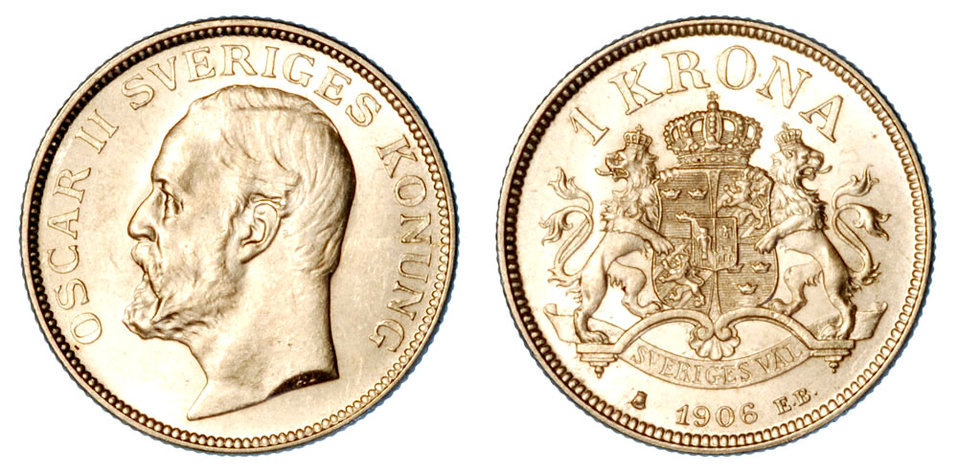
1 kr 1906